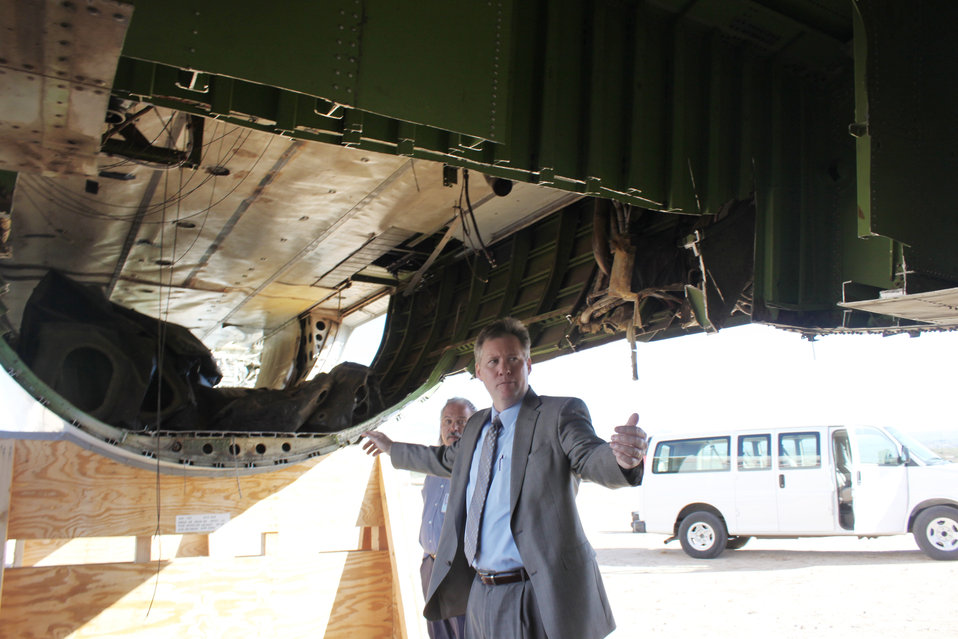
Joint STARS sensor integration

Patrick Dagle, the director of the 751st Electronic Systems Group at Hanscom Air Force Base, Mass., looks at a 707 aircraft that has been used for parts reclamation at the 309th Aerospace Maintenance and Regeneration Group at Davis-Monthan AFB, Ariz. AMARG structural mechanics removed a keel beam from the aircraft to use in a special sensor integration program demonstration.